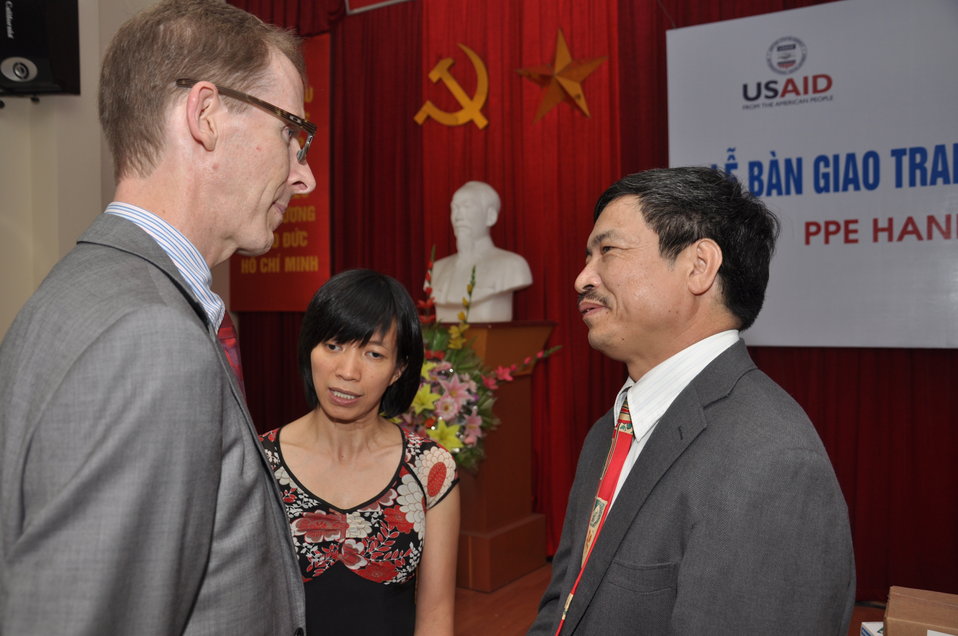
USAID Mission Director Joakim Parker, left, and Director General of Vietnam's Department of Animal Health, Dr. Pham Van Dong at the Protective Gear Handover Ceremony

Handover of personal protective equipment event in Hanoi.